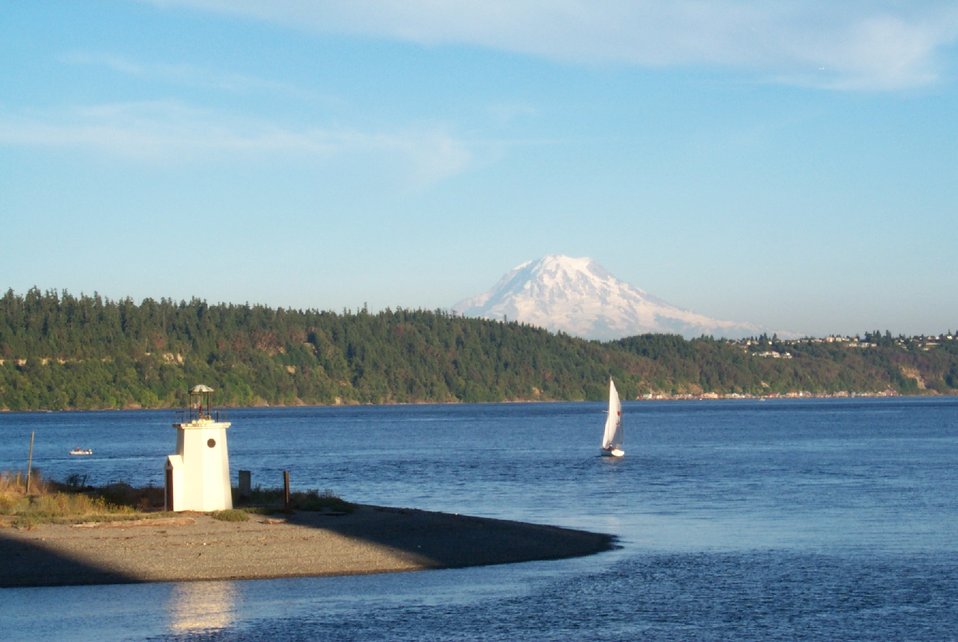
A view of Mt. Rainier from Gig Harbor - looking east.